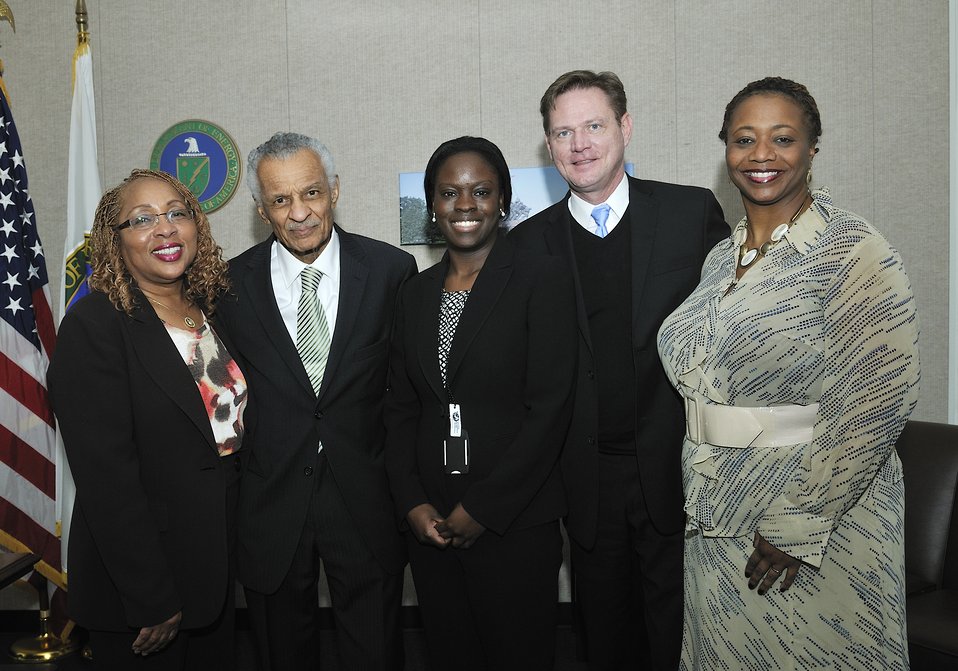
Martin Luther King Jr. Day Celebration at DOE headquarters.